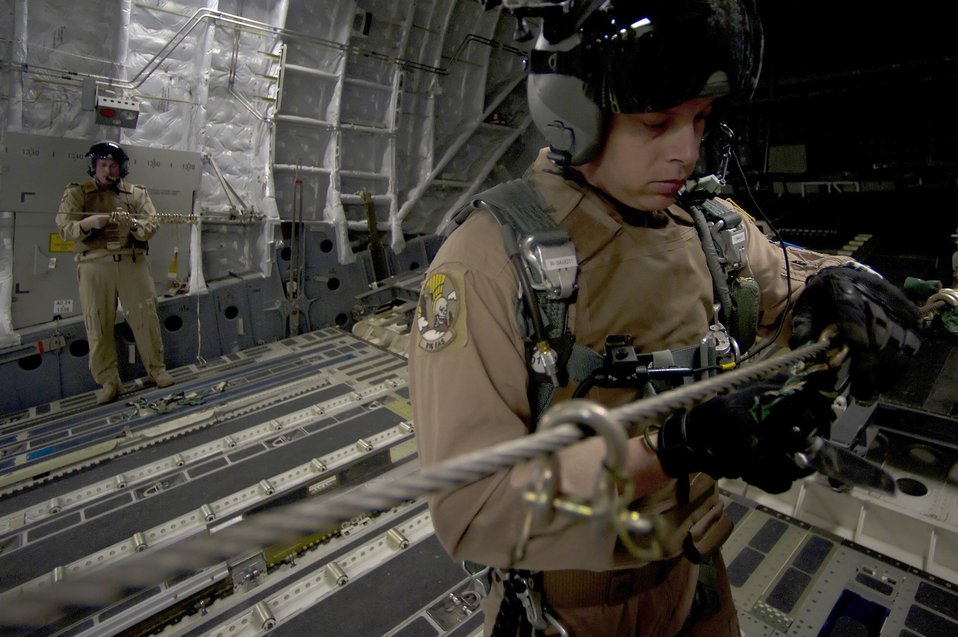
Air delivery cargo drop

Aircrew members disassemble an air delivery line on a C-17 Globemaster III Mar. 3, 2011, after an air delivery mission to remote operating bases in Afghanistan.